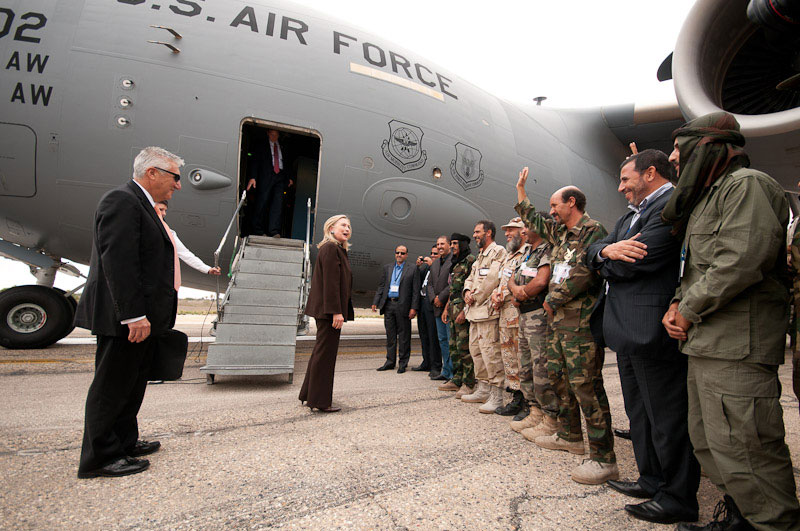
Secretary Clinton Says Farewell to Ambassador Cretz and Libyan Soldiers

U.S. Secretary of State Hillary Rodham Clinton says farewell to U.S. Ambassador to Libya Gene Cretz and Libyan soldiers upon her departure from Tripoli, Libya, on October 18, 2011.